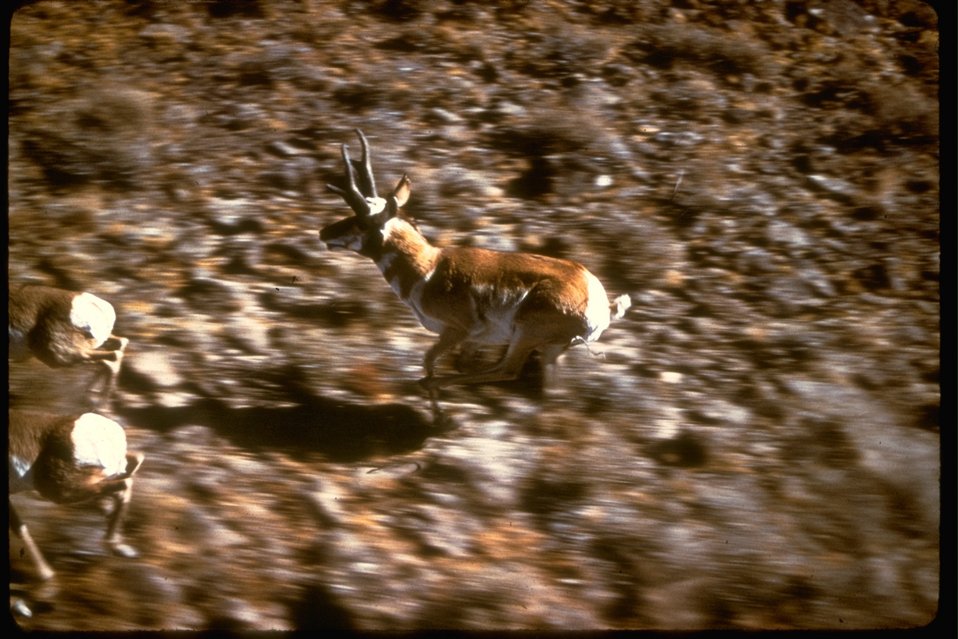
Prong Horn running through the Palomino Hills Wilderness Study Area. OR 3-114.